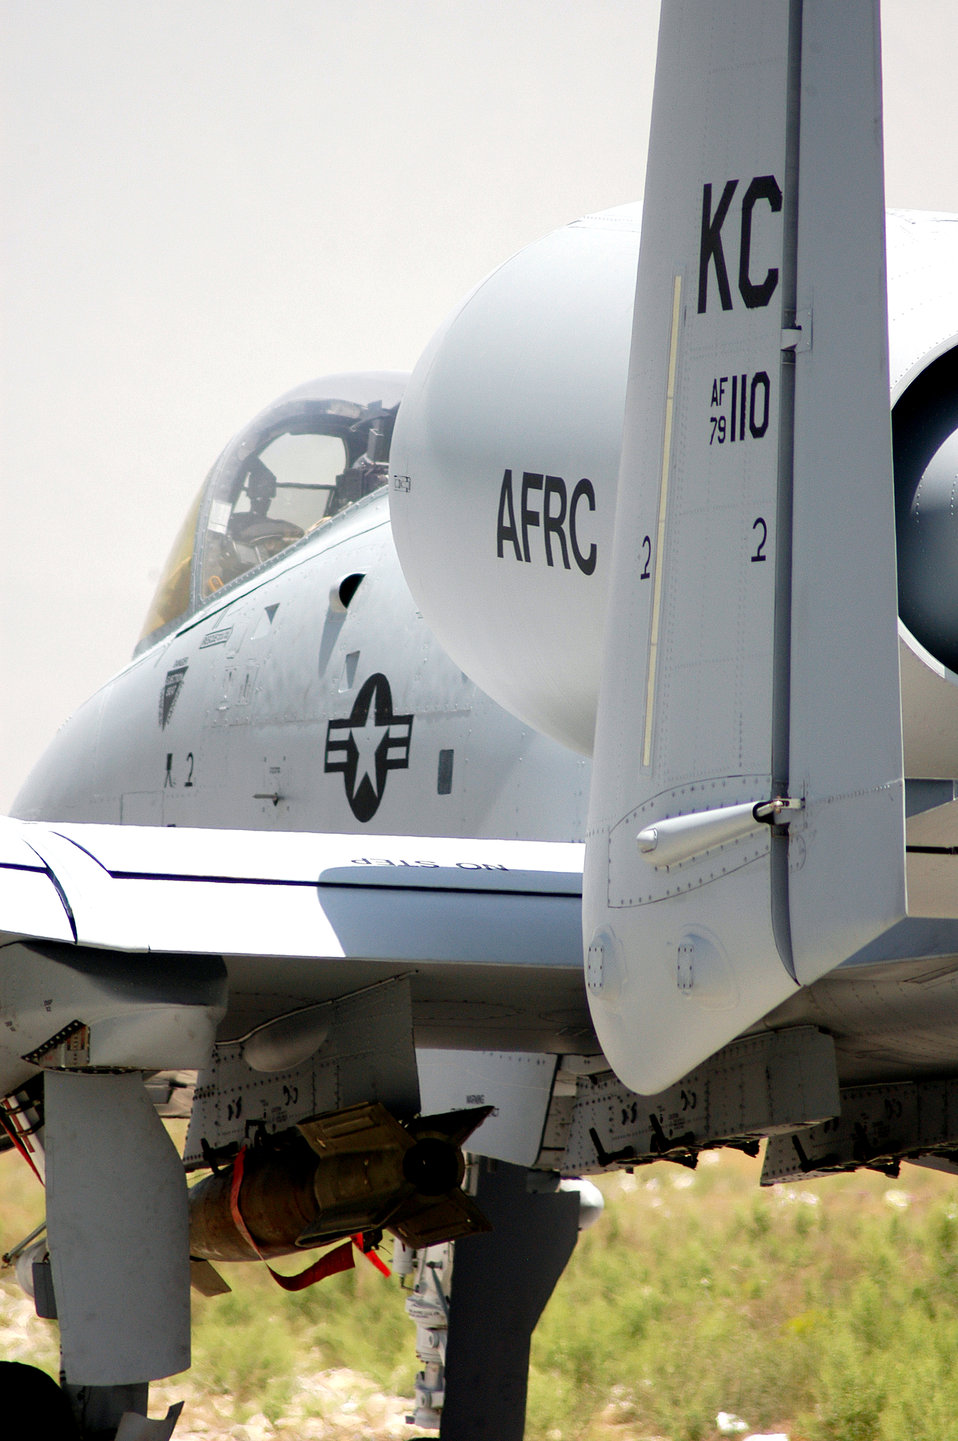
Combat mission

An A-10 Thunderbolt II is lined up for weapons specialists to arm its ordnance on Tuesday, May 23, 2006, at Bagram Air Base, Afghanistan. A-10s from the 52nd Fighter Wing at Spangdahlem Air Base, Germany, and the Air Force Reserve Command's 442nd Fighter Wing at Whiteman Air Force Base, Mo., are deployed to Bagram in support of Operation Enduring Freedom.